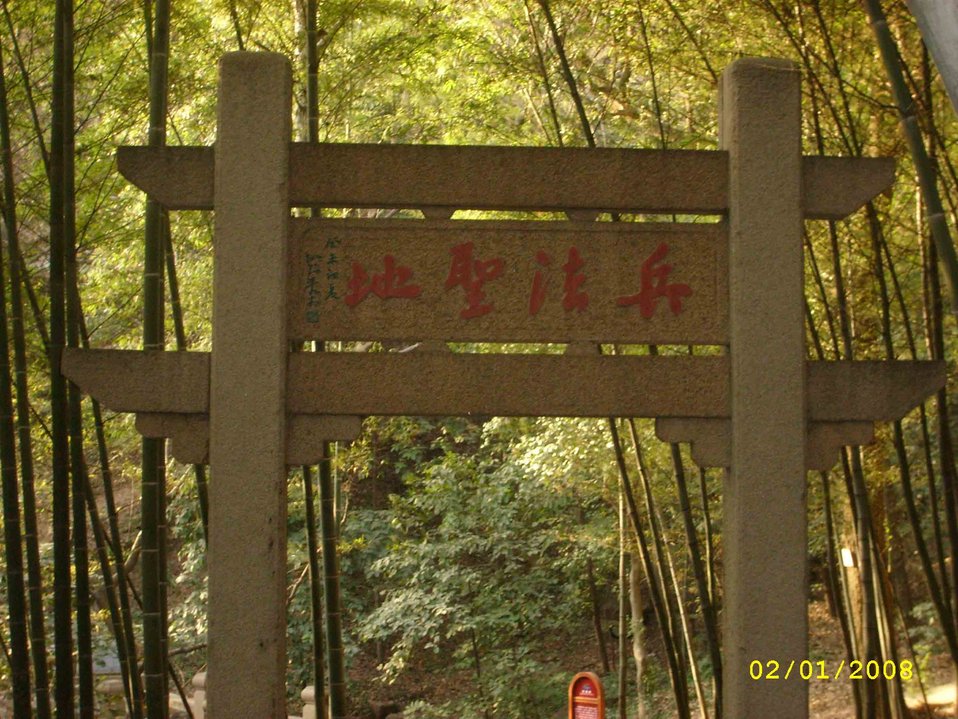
Uploaded by request of Eric Lee

Taken in Sunwu Yuan Park, Suzhou, China

I am writing to you because I have really enjoyed and learned how to protect the environment last year in China. I really enjoyed looking at the stone carvings at the entrance of the park. The smell of the bamboos was very refreshing and good for the body with a river nearby. They displayed some of the books that people wrote on Sunzi Bingfa which inspire a prospective harmonious world through advancing Sunzi's 'The Art of War'. People should protect the environment by reading books about Sunzi at www.leeyuri.org which has a English and Chinese pages.